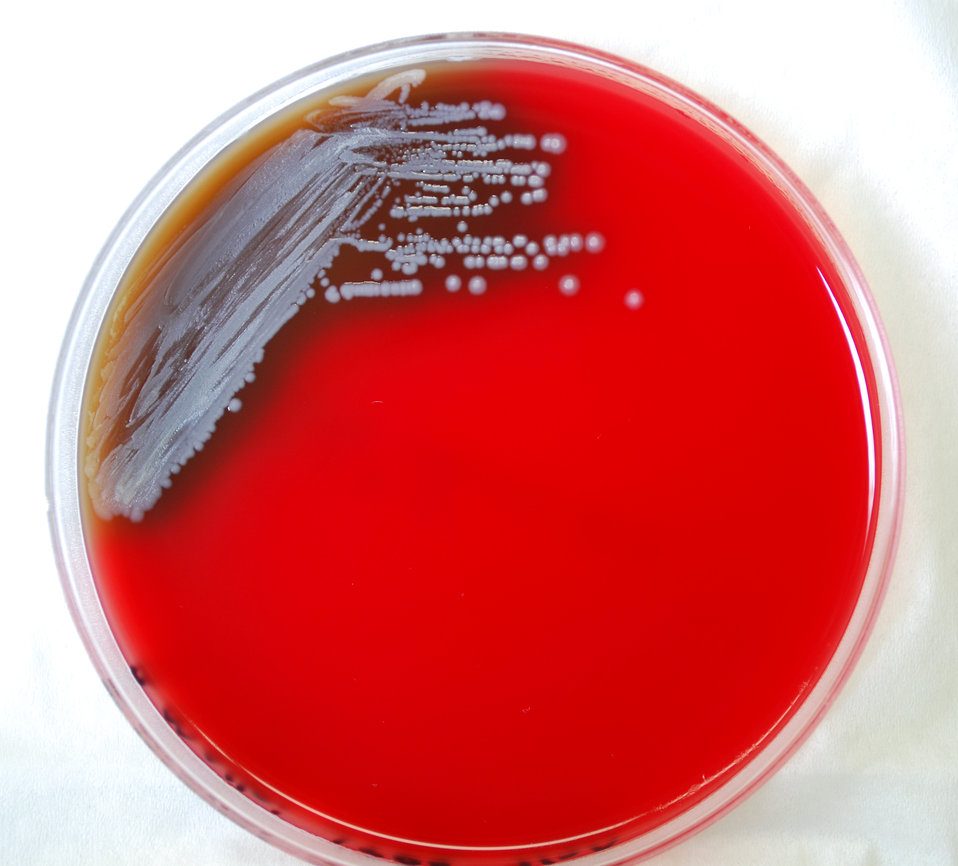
This photograph depicts the colonial morphology displayed by Gram-negative Burkholderia pseudomallei bacteria, which was grown on a medium of sheep's blood agar (SBA), for a 48 hour time period, at a temperature of 37�C. See PHIL 12234 for a closer view of these bacterial colonies.